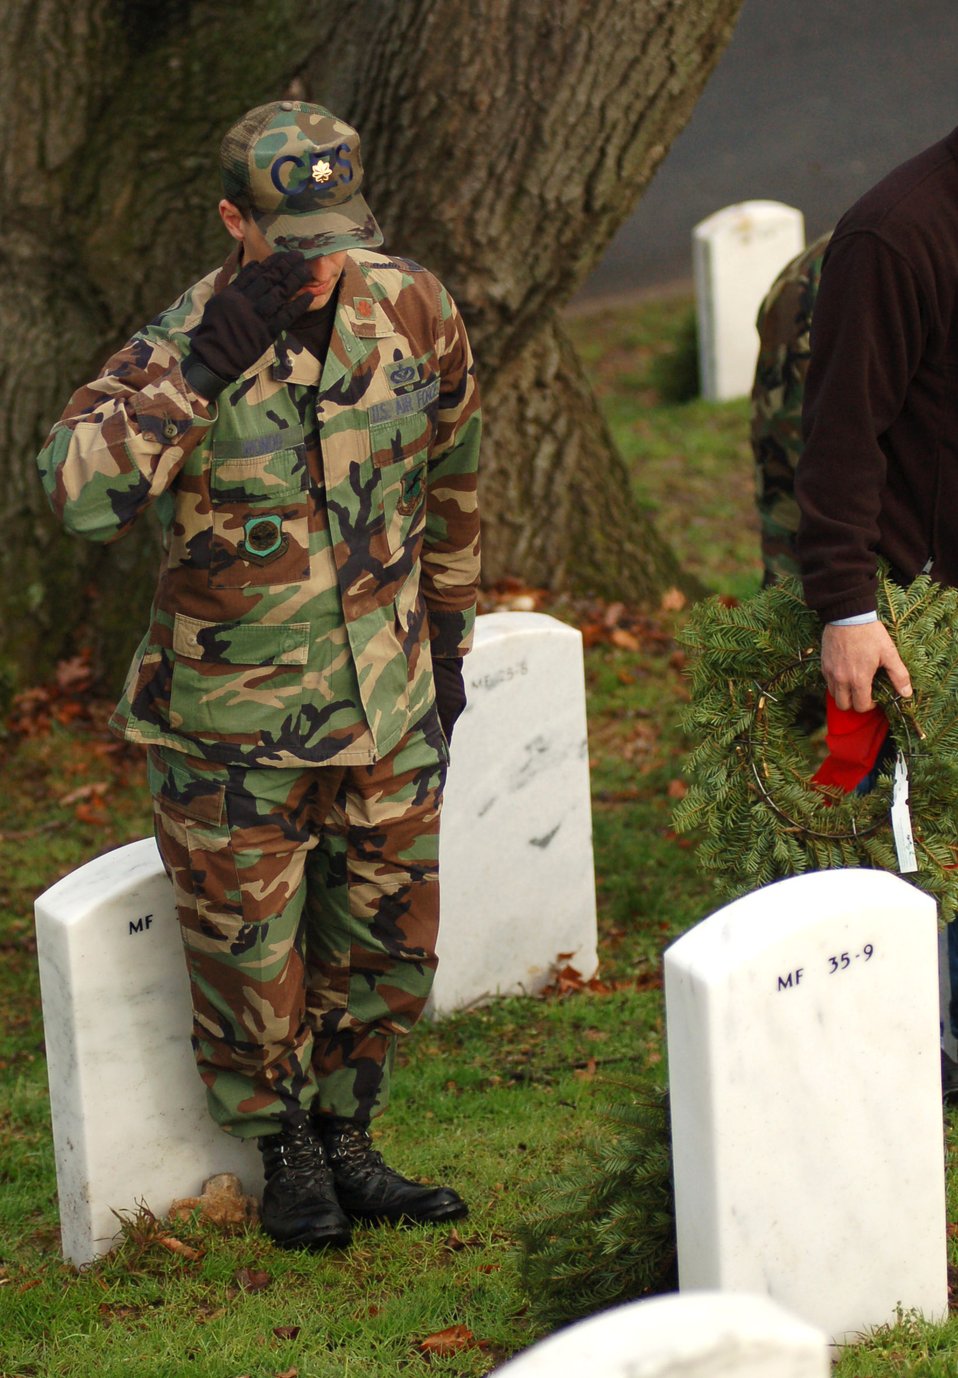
Not forgotten

Maj. Frank Mondo salutes the grave he just laid a wreath on Dec. 14 at Arlington National Cemetery, Va. Major Mondo was one of 44 Dover Air Force Base, Del., Airmen who volunteered to lay 5,000 wreaths at the cemetery to honor those servicemembers who passed away. Major Mondo is assigned to the 436th Civil Engineer Squadron.